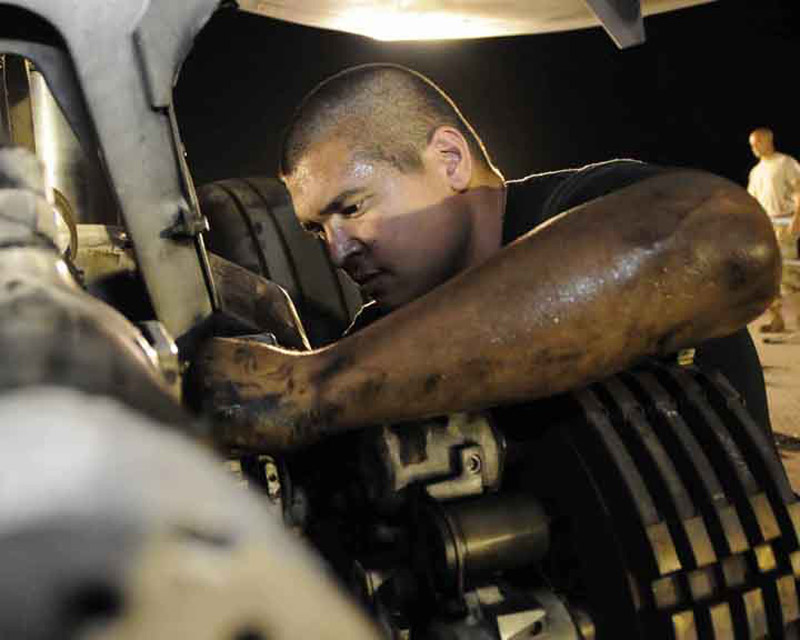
Nocturnal workers

Staff Sgt. Kendall Lizama gets all greased up repairing brake parts on a B-1B Lancer May 29 in Southwest Asia. Sergeant Lizama belongs to the 37th Aircraft Maintenance Unit.